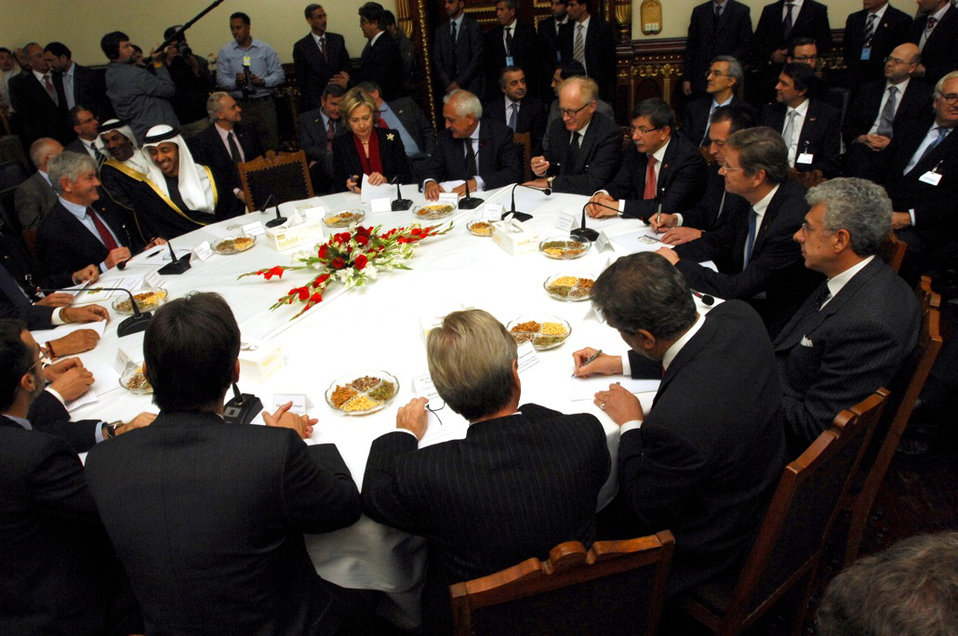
Secretary Clinton Travels to Afghanistan

U.S. Secretary of State Hillary Rodham Clinton during a meeting at the U.S. Embassy in Kabul, Afghanistan November 19, 2009. Secretary Clinton traveled to Afghanistan to attend President Hamid Karzai's November 19, 2009 inauguration ceremony, meet with Afghanistan's leadership, international partners and allies, U.S. troops, staff in Provincial Reconstruction Teams, and Embassy staff.